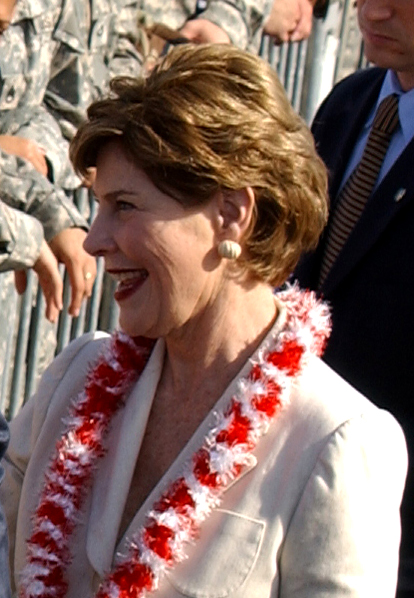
Laura Bush

First Lady Laura Bush met with servicemembers, Nov. 21, on the Hickam Air Force Base flightline, before boarding Air Force One and heading back to Washington, D.C. During the stopover Mrs. Bush used the opportunity to meet with servicemembers, retirees and family members to talk about the quality of life issues important to them.